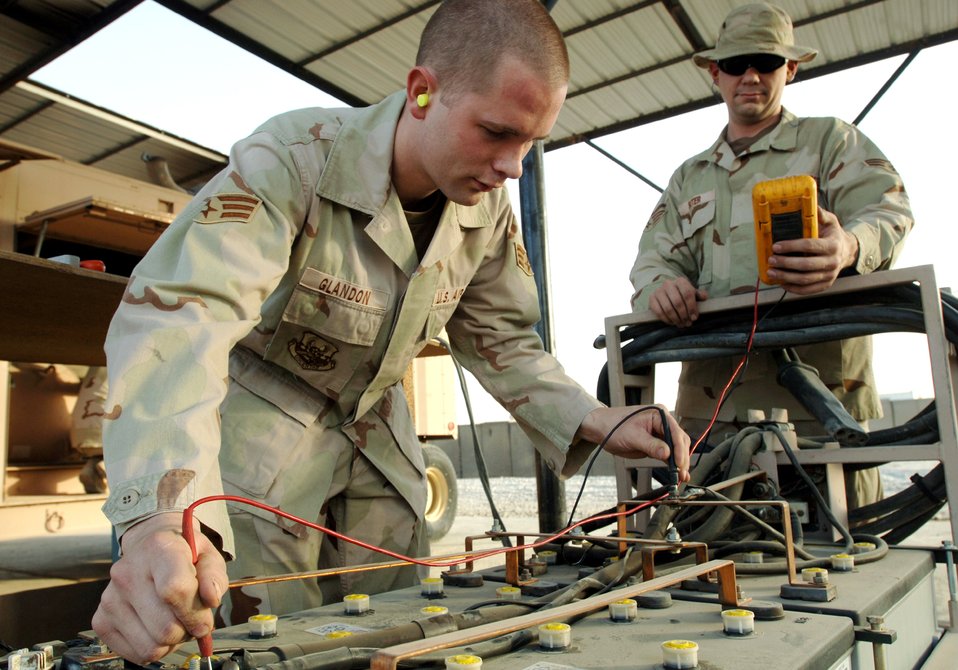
Operation Iraqi Freedom

ALI BASE, Iraq -- Senior Airmen Leslie Glandon (left) and James Suter, test voltage on a